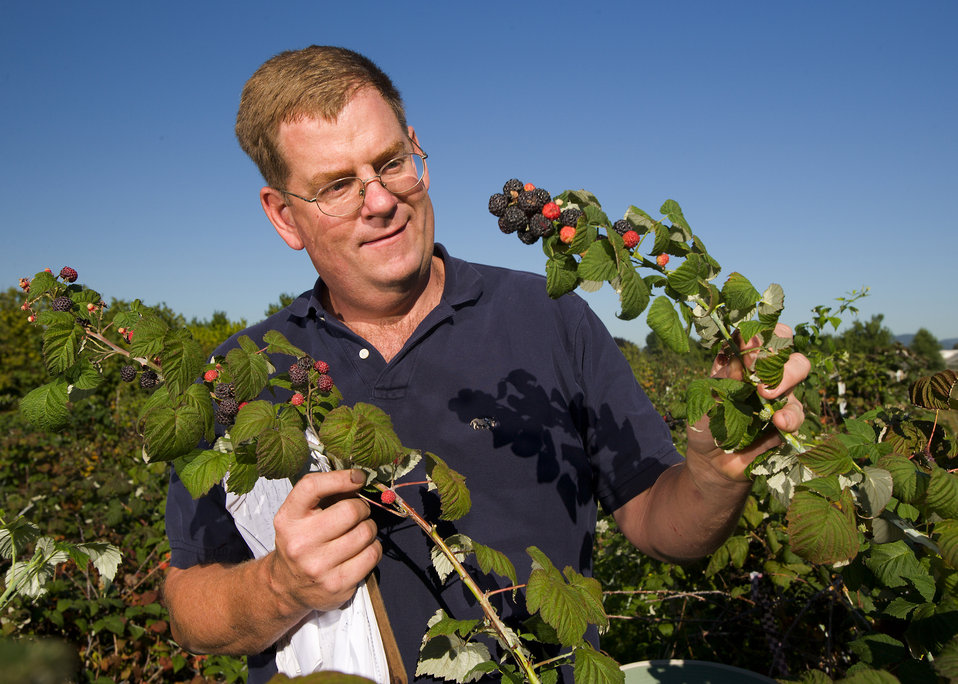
U.S. Department of Agriculture (USDA) Agricultural Research Service (ARS) geneticist Chad Finn evaluates black raspberry plants for resistance to black raspberry necrosis virus on Aug. 30, 2007.